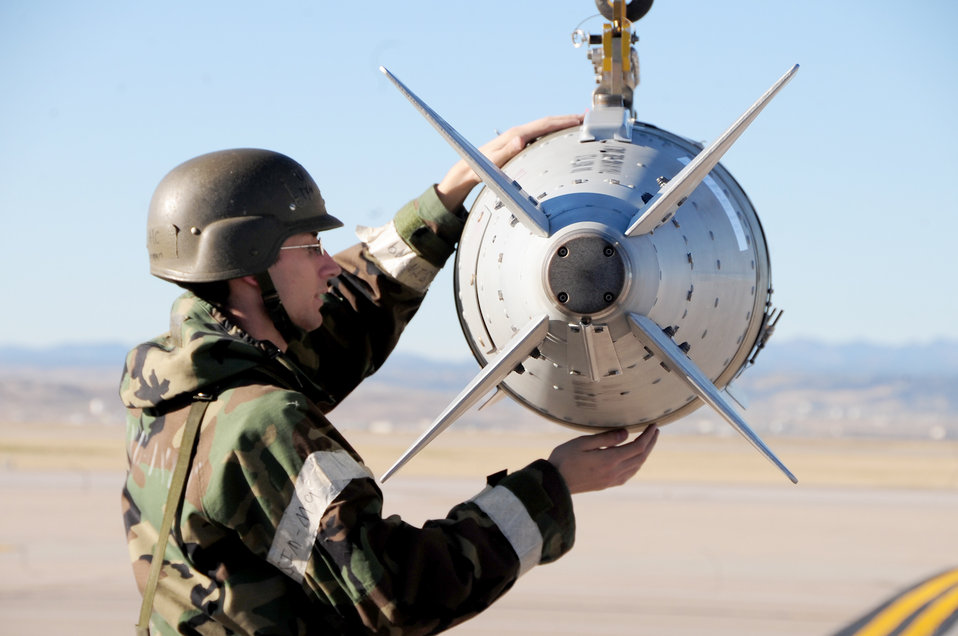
Phase II Operational Readiness Inspection

Airman 1st Class Timothy Foreman makes sure a guided bomb unit-31 is on a bomb lift securely during a Phase II Operational Readiness Inspection Oct. 15, 2010, at Ellsworth Air Force Base, S.D. Airman Foreman is a munitions load crew member of the 28th Munitions Squadron.